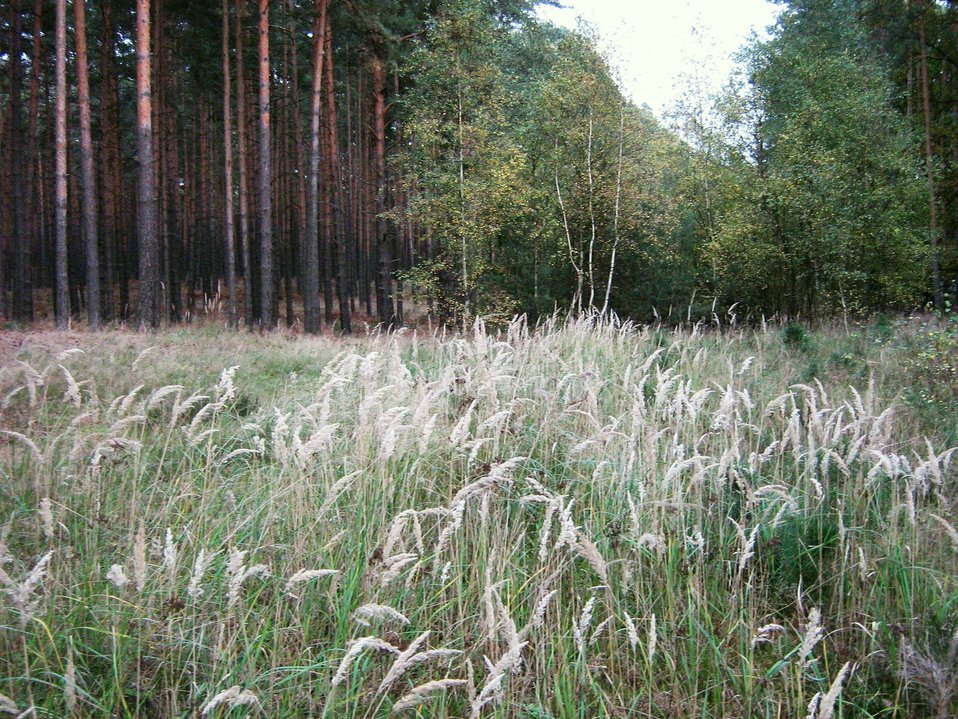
Calamagrostis epigejos Deutsch: Landreitgras in der Zauche, einem Wald südlich von Ferch im Landkreis Potsdam-Mittelmark, Brandenburg.